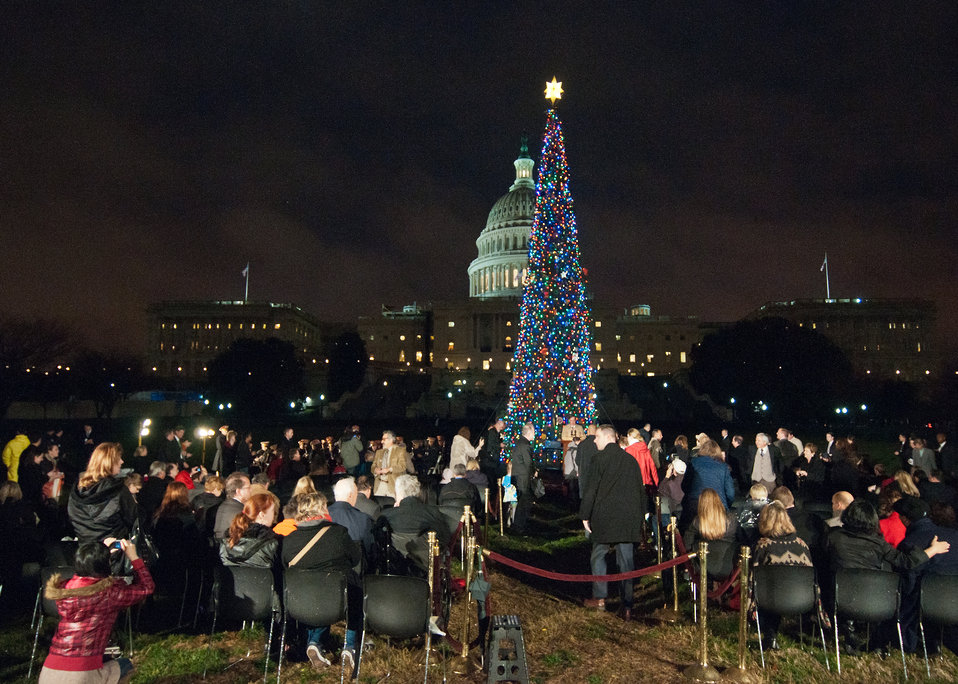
The Capitol Christmas Tree lighting ceremony was held on Tuesday, December 6, 2011 on the West lawn of the U. S. Capitol in Washington, D.C. In 1970 the Architect of the Capitol approached the United States Department of Agriculture Forest Service for assistance in providing a Capitol Christmas Tree; and since then, it has been an honor for one of our country’s National Forests to produce a tree for the holiday’s. 2011 will be the fourth time California has contributed the U.S. Capitol Christmas Tree. Known as 'The People’s Tree', the 2011 Capitol Christmas Tree is a 63 ft., 118 year old, Sierra White Fir harvested from the Stanislaus National Forest in the Central Sierra Nevada Mountains of California. During the seven day tour of California in November citizens collected non-perishable food items to demonstrate the goodwill and generosity of California's people to share with those less fortunate during the holiday season.